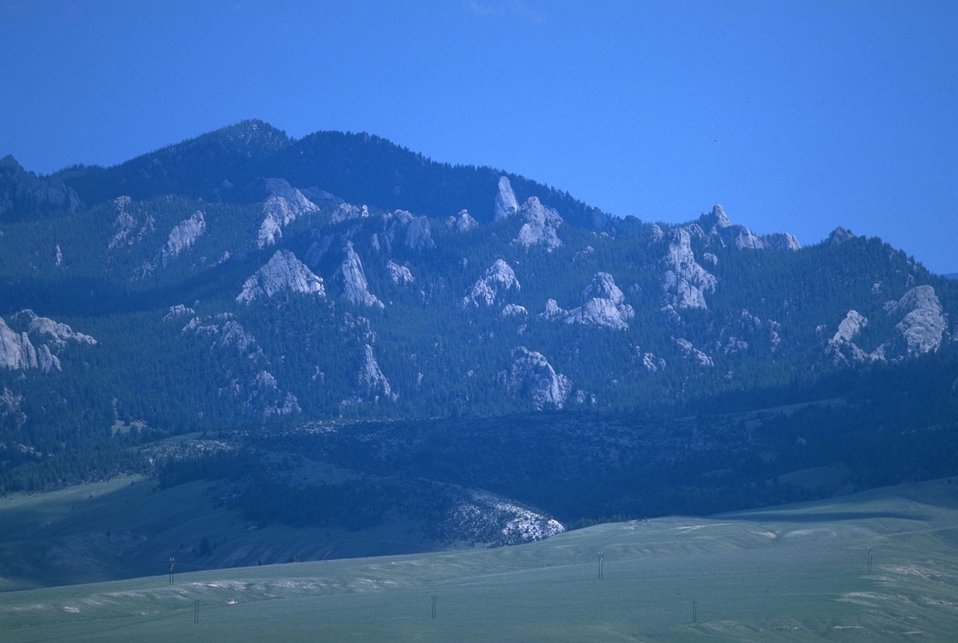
Closeup of rock formations along the mountainside